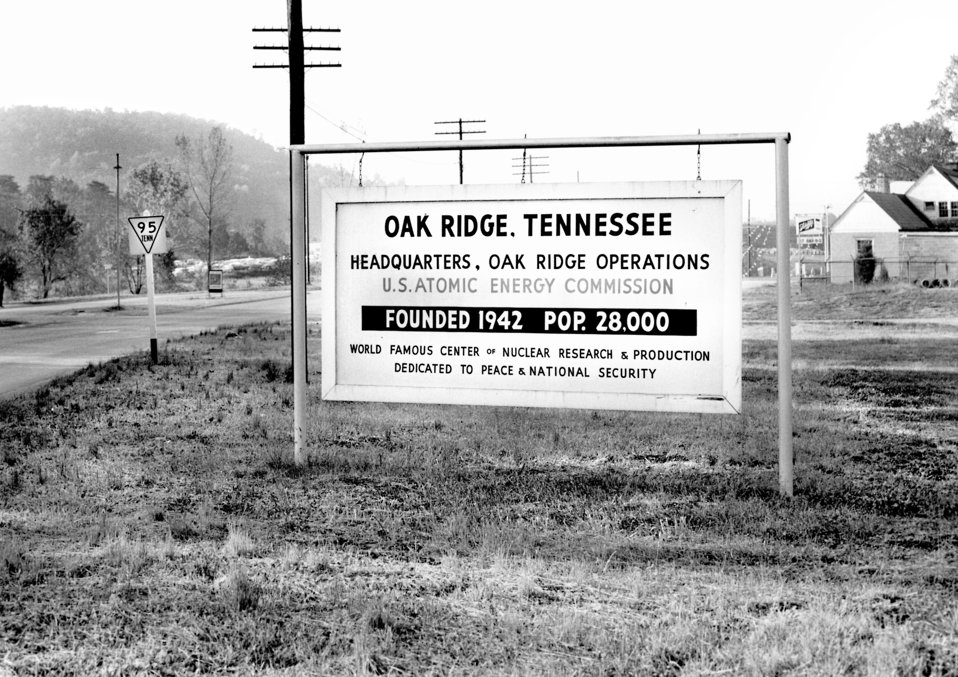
Oak Ridge City Sign Elza Gate 1960

60-1036 DOE photo T.R. Cook 11-1-1960 Oak Ridge Tennessee